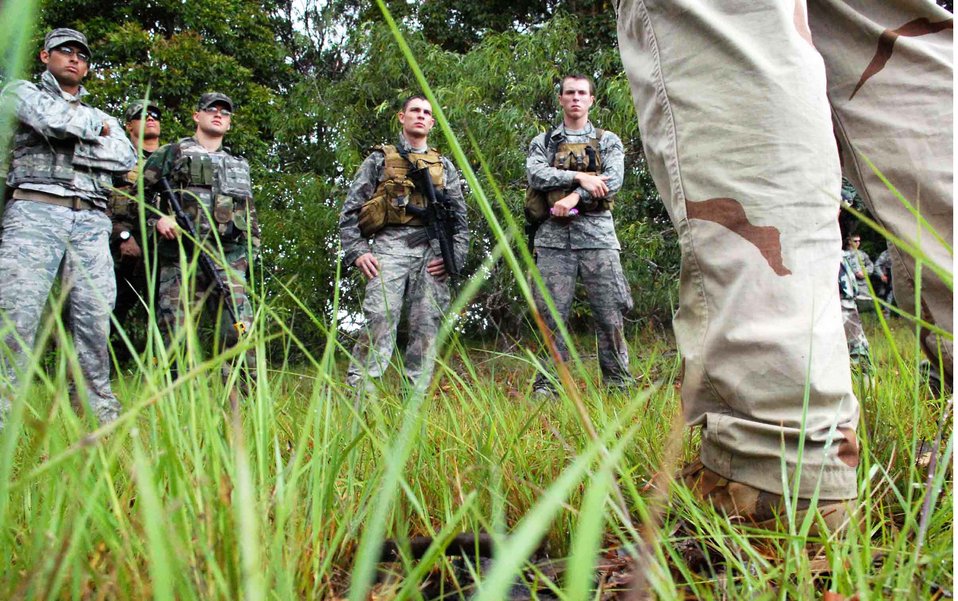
Tactical air control party Airmen trained with Infantry Soldiers

Tactical air control party Airmen trained with 25th Infantry Division Headquarters, Headquarters Company 114th Infantry Soldiers at Wheeler Army Airfield's East Range near Hickam Air Force Base, Hawaii, June 23-26. The 25th Air Support Operations Squadron partnered with the Army to glean information based on experiences the Soldiers have had in Iraq and Afghanistan recently to prepare for an upcoming 25th ASOS deployment. The training helped sharpen proficiencies necessary for radio operators, maintainers and drivers to become combat mission-ready joint terminal attack controllers.